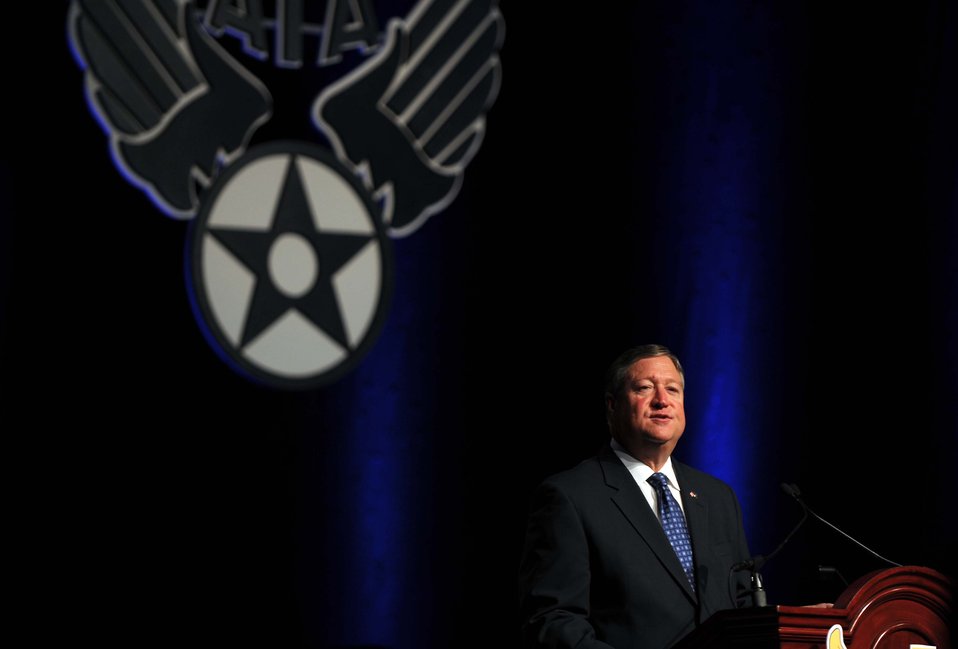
Air Force Associations 2011 Air & Space Conference & Technology Exposition